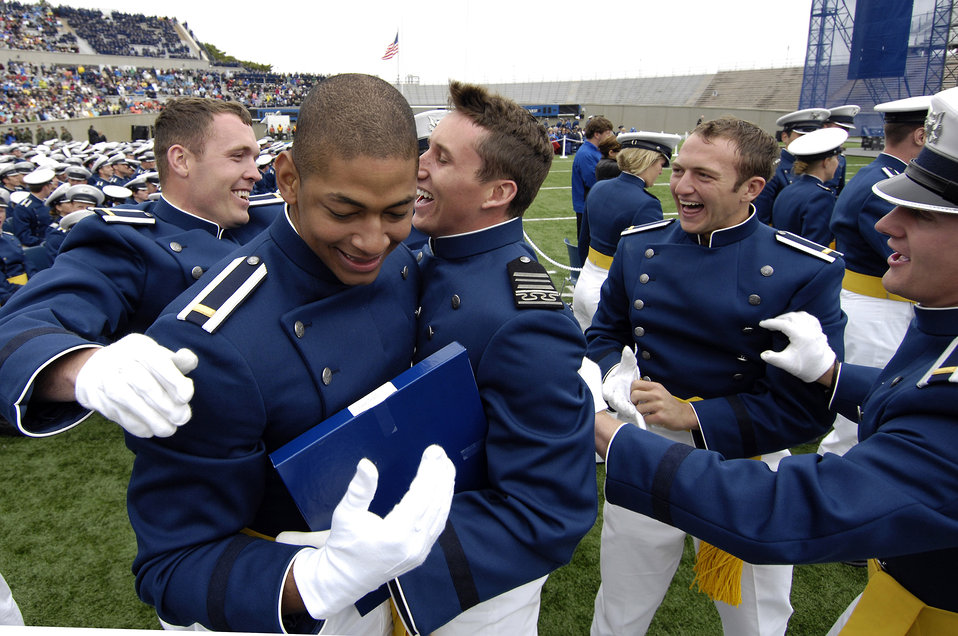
Academy Class of 2008 graduates

Newly-graduated second lieutenants celebrate after the traditional hat toss and Air Force Thunderbird flyover during the U.S. Air Force Academy Class of 2008 Graduation Ceremony at Falcon Stadium May 28. The Class of 2008, the 50th Academy class, comprised 1,012 cadets who will enter the Air Force as second lieutenants.